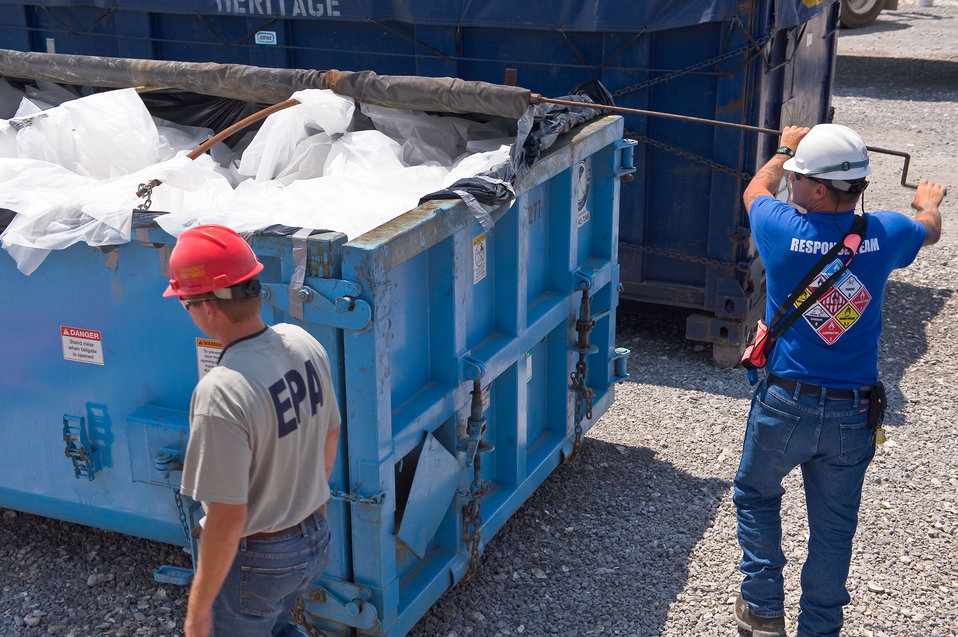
August 6, Inspecting waste containers

EPA teams are inspecting waste containers at all staging areas.